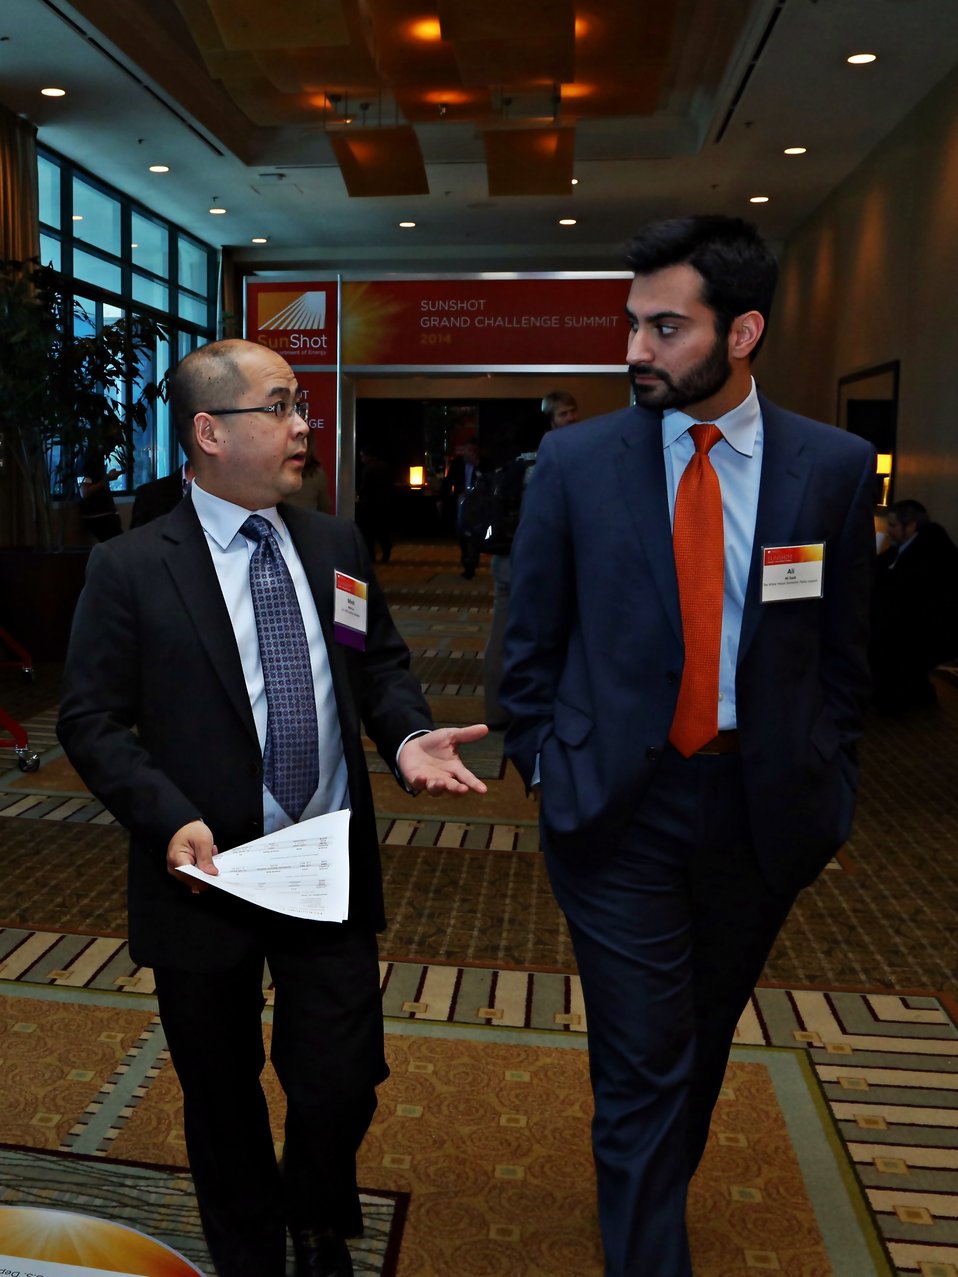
VIP Walkthough 6

SunShot Director Minh Le, and Ali Zaidi, Deputy Director for Energy Policy, The White House Domestic Policy Council.